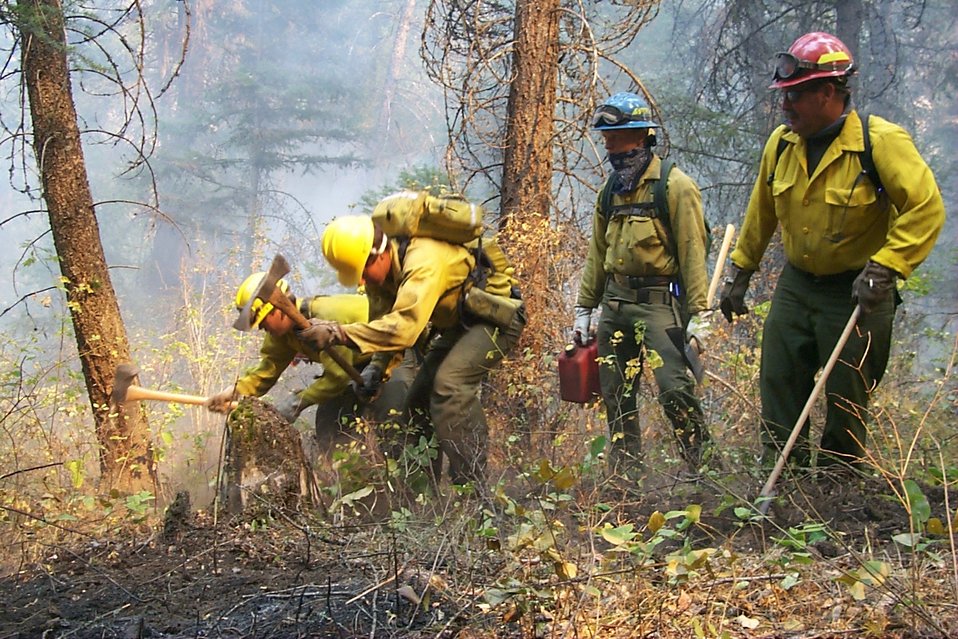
Line crew Fire Clearwater Fire Salmon Field Office USRD Upper Snake River District